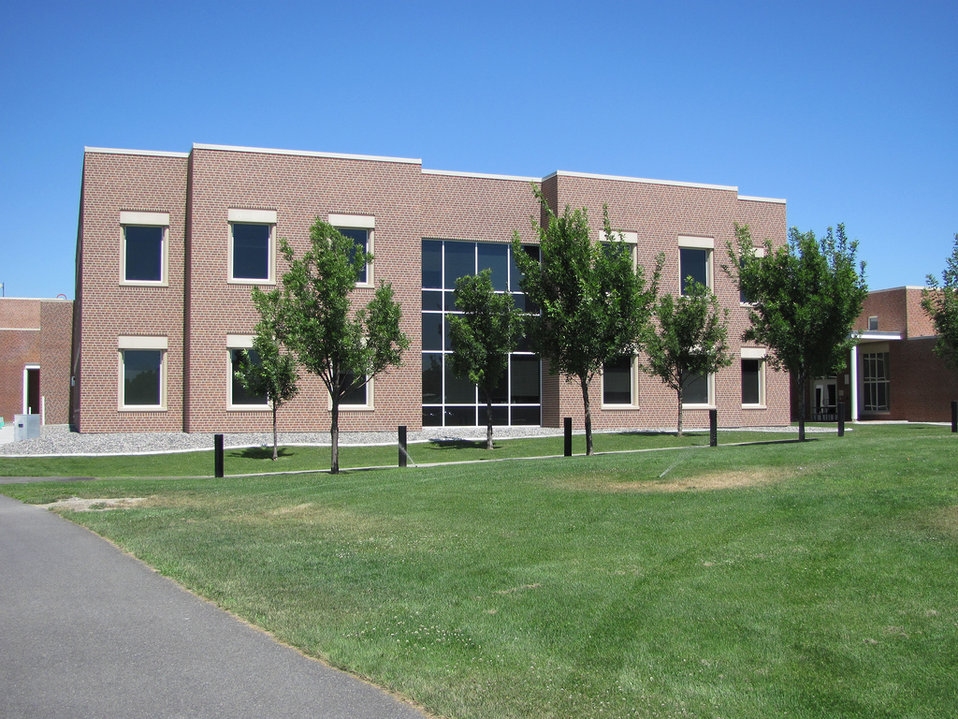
The Environmental Molecular Sciences Laboratory, a DOE national scientific user facility located on the PNNL campus, offers an open, collaborative environment to scientists around the world.
EMSL offers access to instruments otherwise unavailable to many at their home institutions to further their scientific studies. All resources housed within EMSL are available at no cost to the researchers if the results are shared in the open literature.